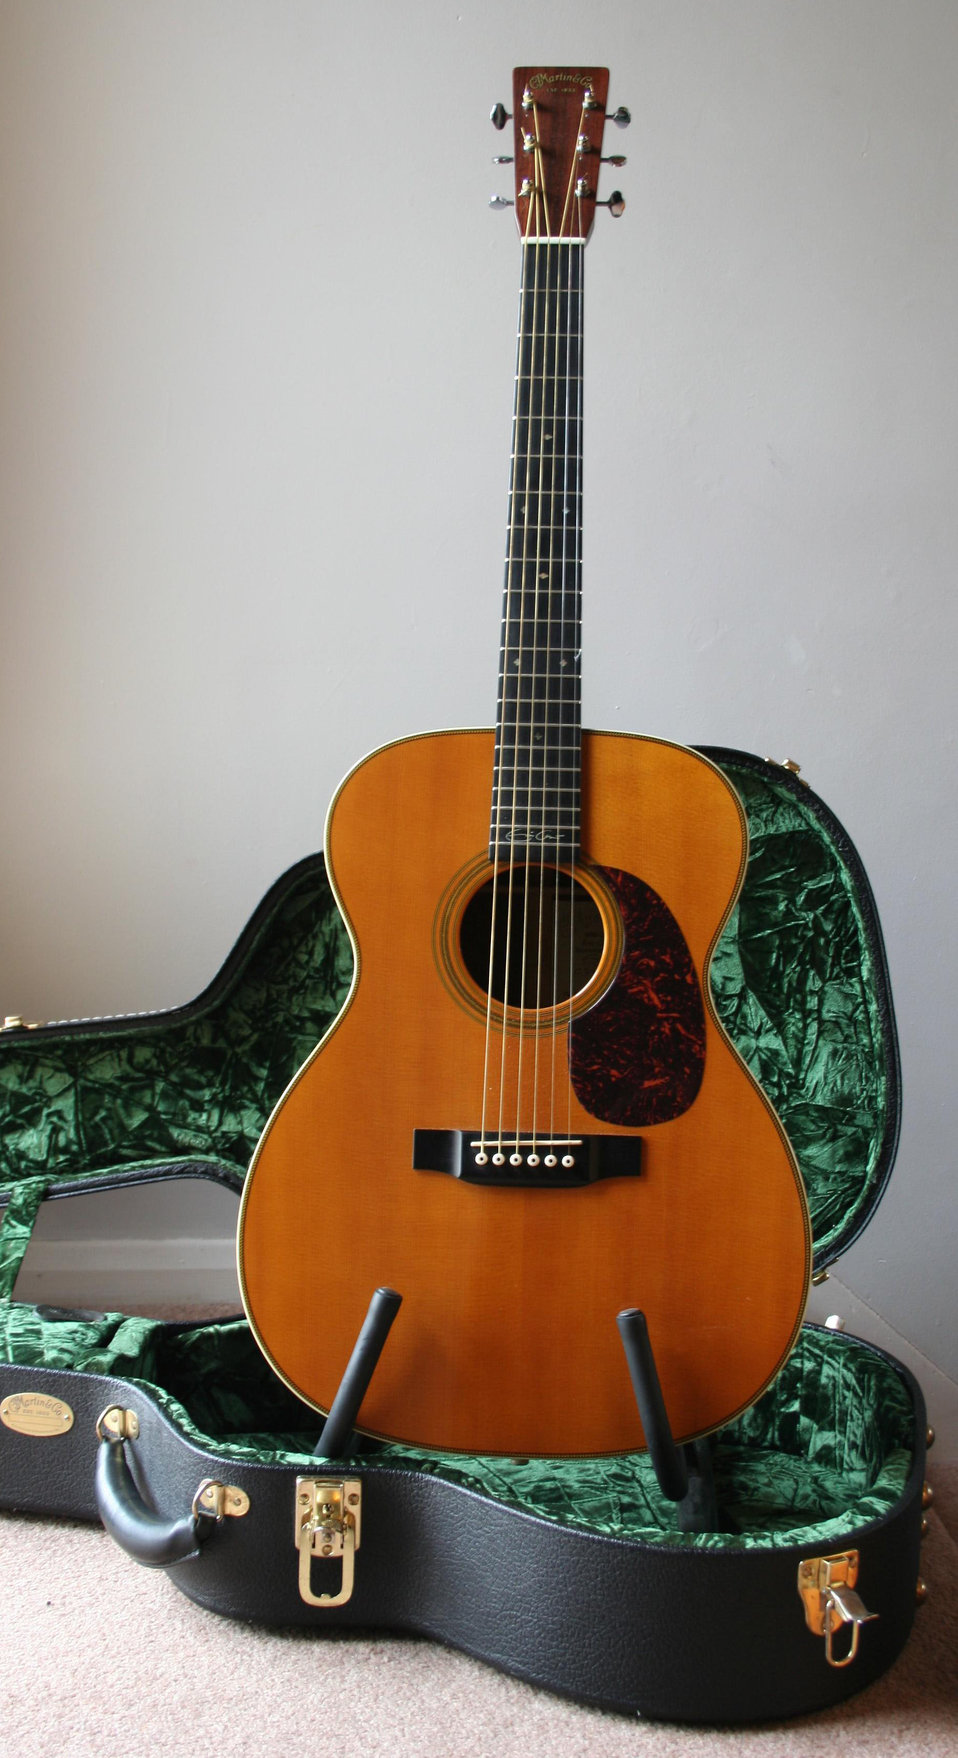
C.F. Martin 000-28EC (Eric Clapton model) Acoustic Guitar